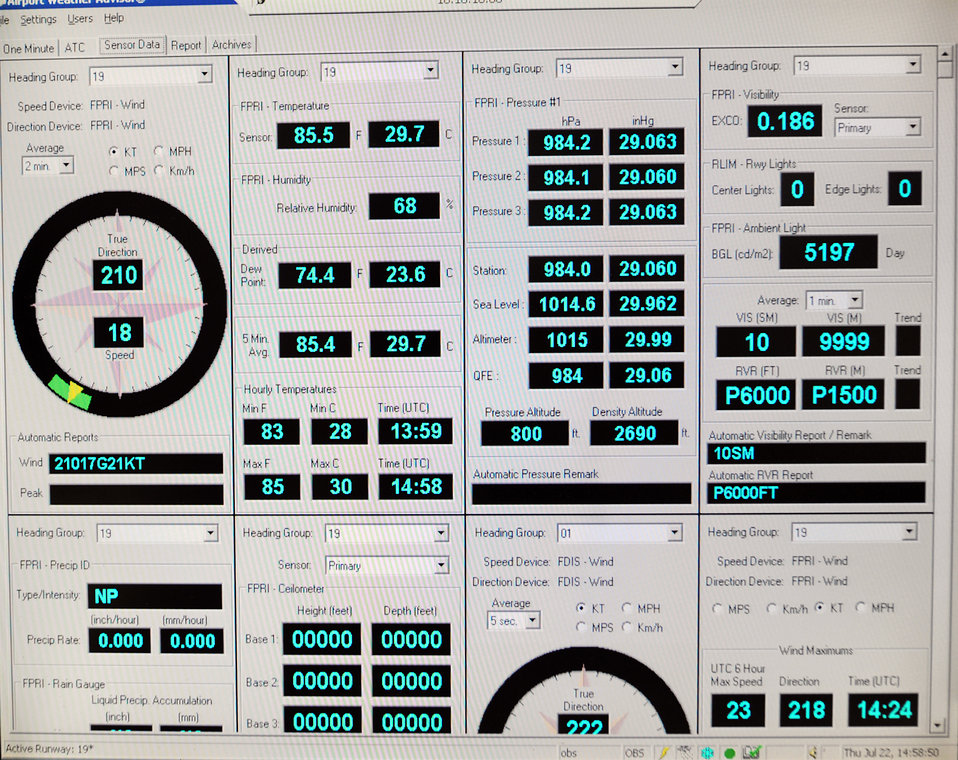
Eyes of the storm

Current weather readings are taken from sensors at various places on the flightline and displayed at base operations on Whiteman Air Force Base, Mo. Wind direction and speed are vital information to arriving and departing aircraft.